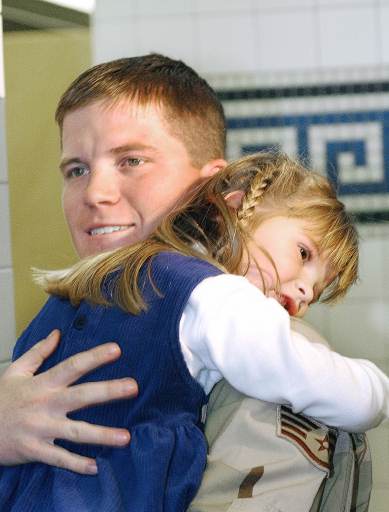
Welcome home, daddy!

DOVER AIR FORCE BASE, Del. -- Staff Sgt. Joe Neubaur holds his 4-year-old daughter, Katlyn, in the passenger terminal here after returning from a three-month deployment to Kandahar, Afghanistan, as part of Operation Enduring Freedom. Neubaur is assigned to Dover's 436th Aerial Port Squadron.